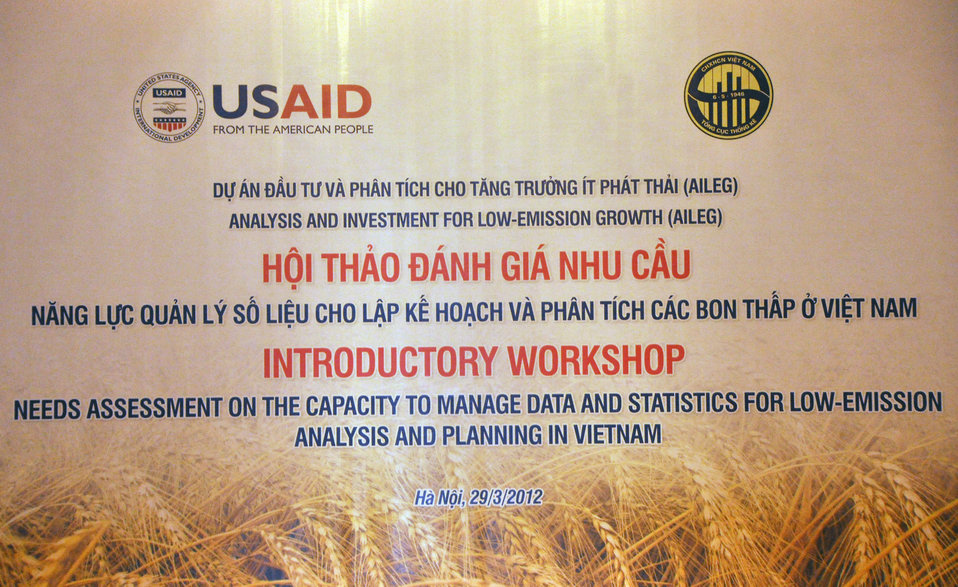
Low Emissions Analysis and Planning Workshop Backdrop